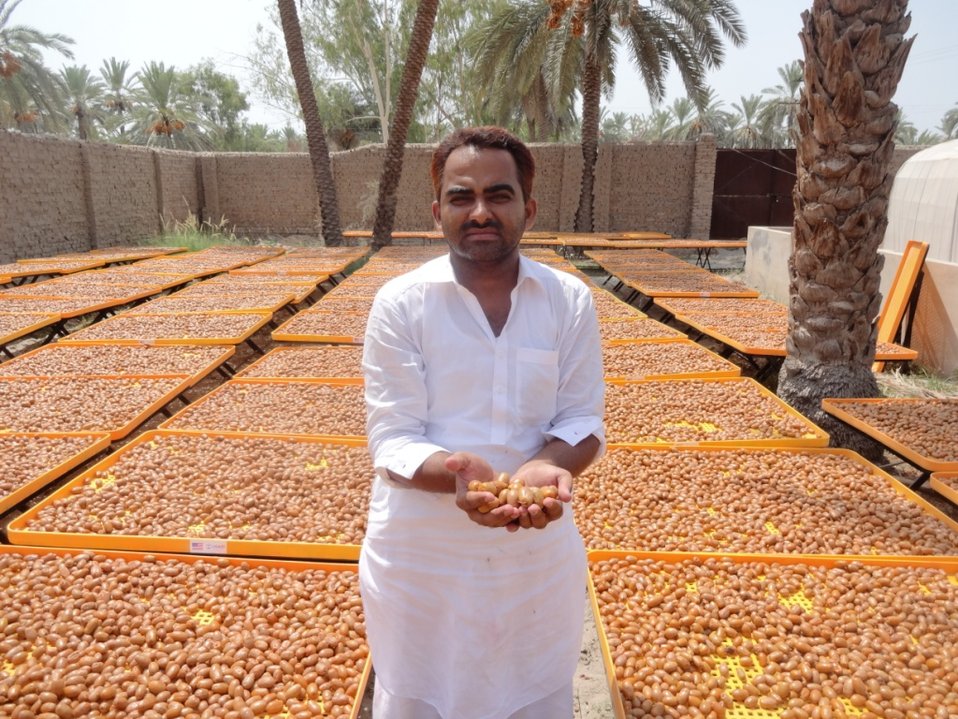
Dates Dost Program: Date farming and processing is a developing industry in Pakistan, with a growing international market share of around 6 to 8 percent. USAID through its Firms Project is leveraging on resources and expertise in increasing sales revenue